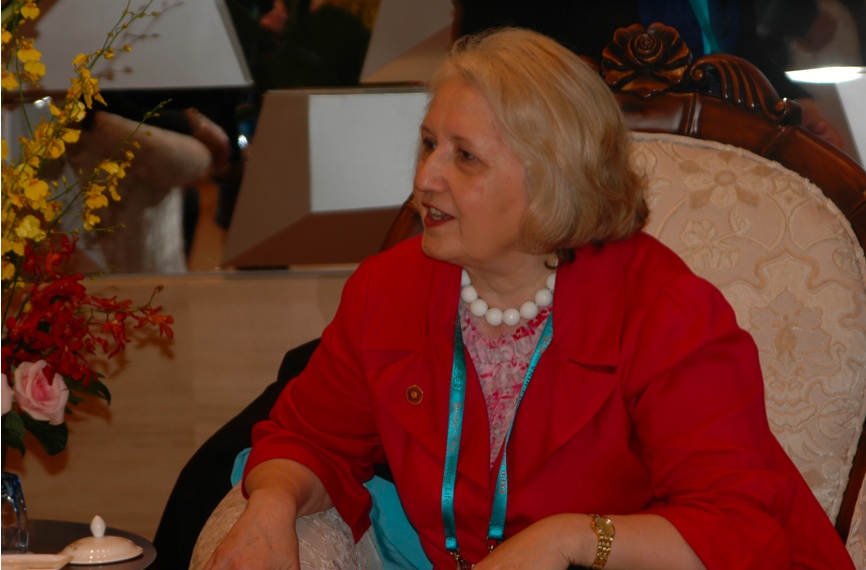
Ambassador-at-Large Verveer Speaks With Secretary Clinton

Ambassador-at-Large for Global Women’s Issues Melanne Verveer speaks with U.S. Secretary of State Hillary Rodham Clinton in Shanghai, China, May 22, 2010.